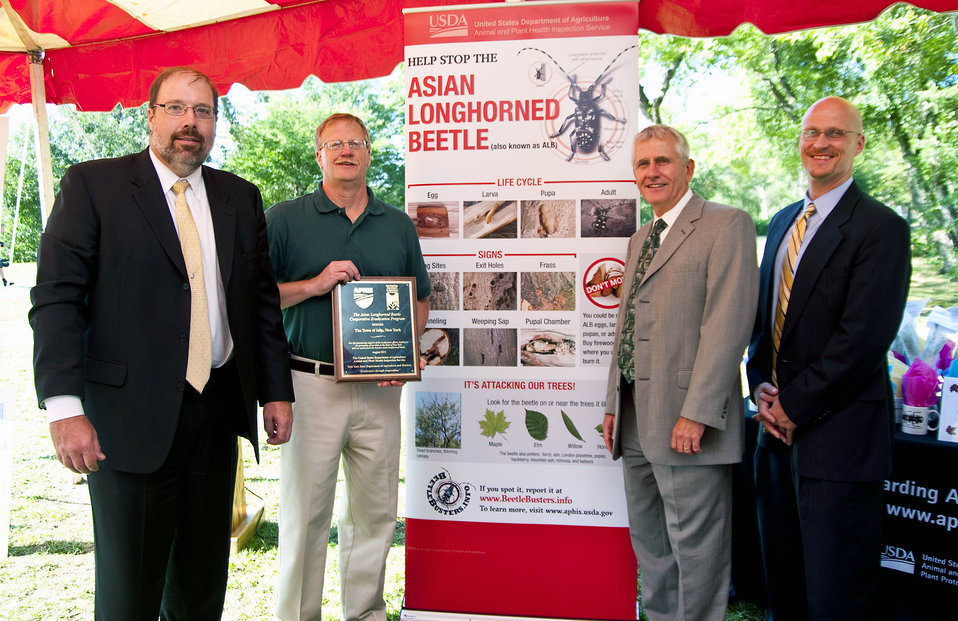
On Tuesday August 23, 2011, USDA Animal Plant Health Inspection Service along with state and local partners in New York State declared Islip New York free of the Asian Longhorned Beetle (ALB). The ALB is an invasive plant pest that is damaging to many species of hardwood trees; including Maple; Elm; Ash; Birch; Willow and Poplar trees. Certificate of Appreciation was given to Town of Islip for their help with Asian Long Horn Beetle eradication, (L-R) Kevin King, Director, Division of Plant Industry NY Department of Agriculture and Markets; Greg Dawson, Town of Islip Commissioner of Parks; Vic Harabin, Director, Plant Protection & Quarantine, USDA APHIS and Bill Ketzer, Special Assistant to the Commissioner, NY Department of Agriculture and Markets.